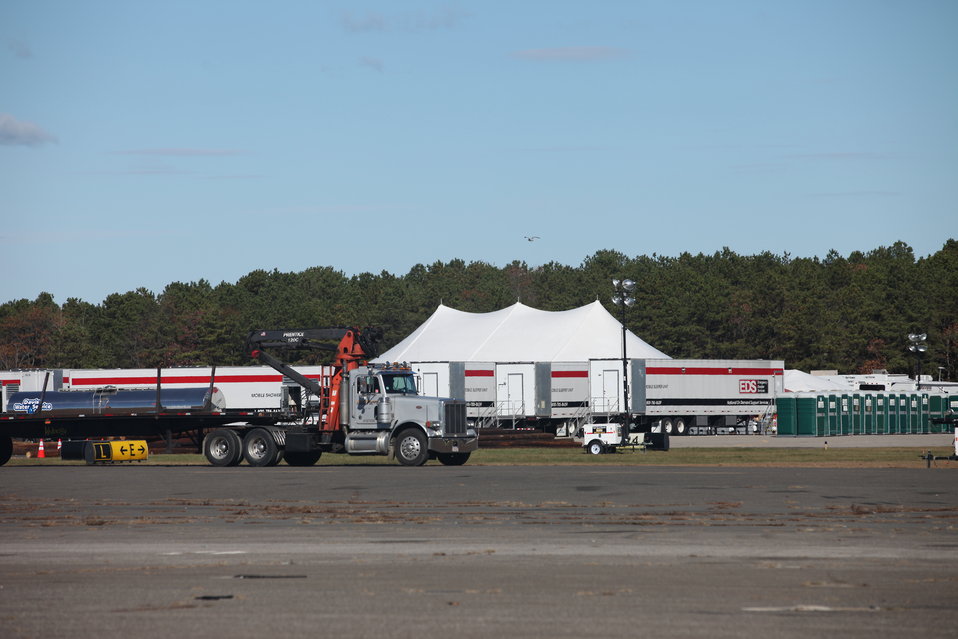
FEMA staging area on Long Island (NY)

One of FEMA's staging area and command centers based at Brookhaven airport on Long Island, NY in the aftermath of storm Sandy.